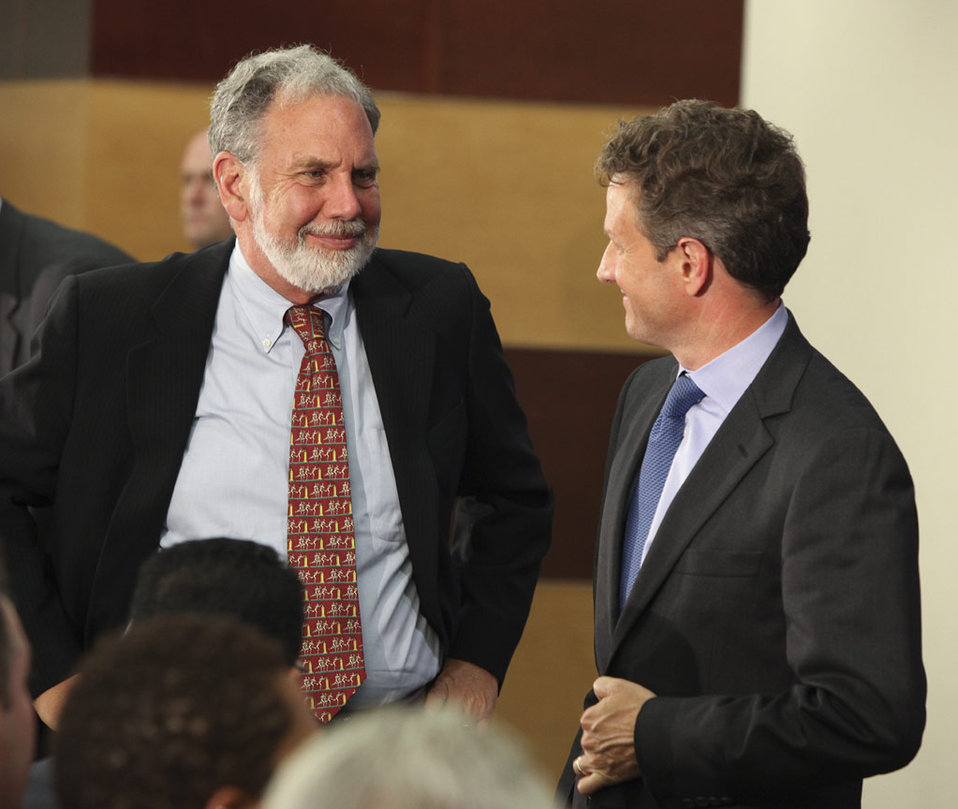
Secretary Geithner Delivers Remarks on Financial Reform at NYU, 8/2/2010

NYU President John Sexton and Secretary Geithner immediately following his remarks.